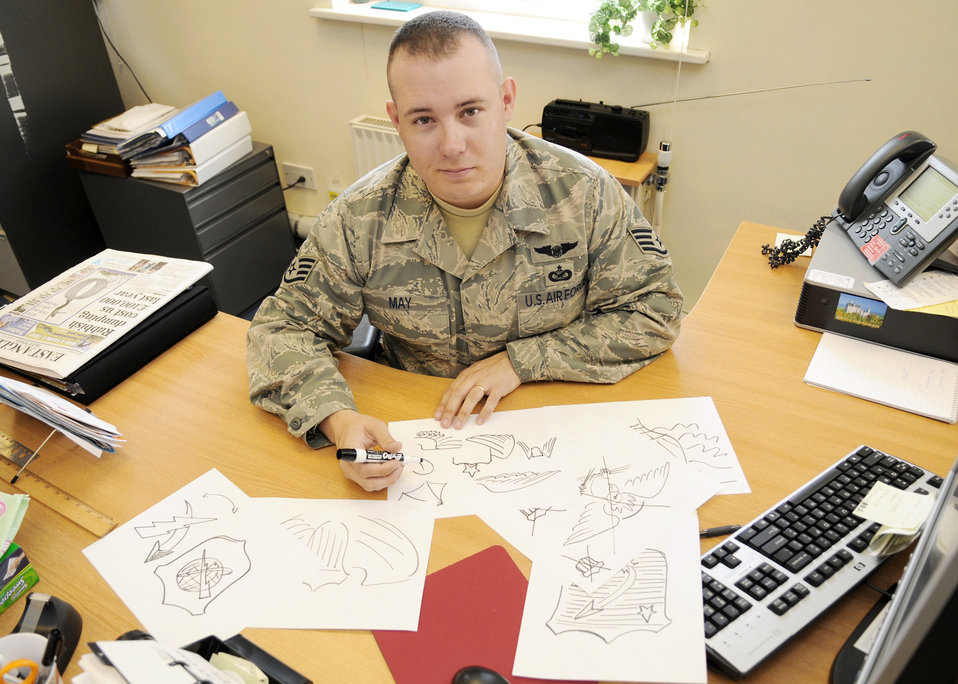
Airman sketches his way into Air Force history with UAS wings design

Staff Sgt. Austin May designed a occupational badge, or wings, to be worn by future unmanned aircraft system pilots. Air Force Chief of Staff Gen. Norton Schwartz approved Sergeant May's design. The wings were presented to the graduates of the first Beta class during a ceremony at Creech Air Force Base, Nev., Sept. 25, 2009. Sergeant May is a public affairs craftsman from the 100th Air Refueling Wing, Royal Air Force Mildenhall, England.